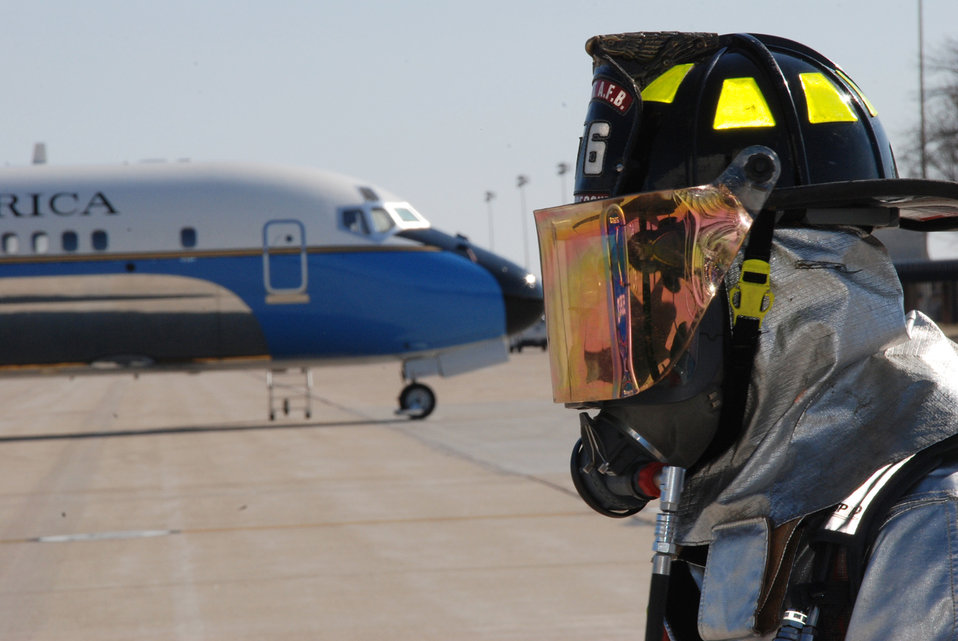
Keeping a wary eye

A firefighter looks over a C-9 assigned to the Air Force Reserve Command's 932nd Airlift Wing during training at Scott Air Force Base, Ill. Firefighters stay busy keeping their skills proficient each drill weekend at the unit near Belleville, Ill.